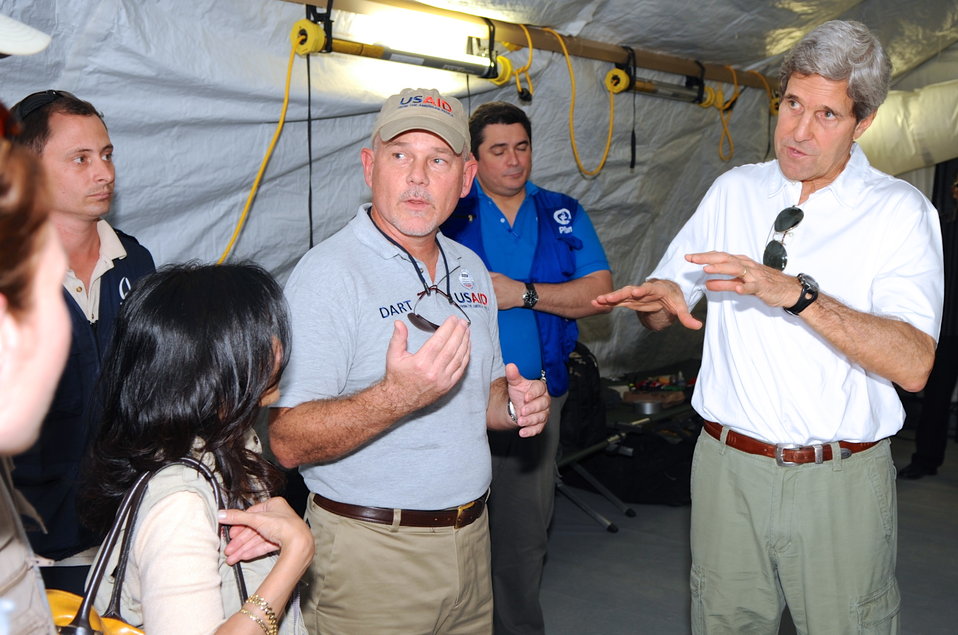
Secretary Kerry Receives a Typhoon Haiyan Recovery Briefing During Visit to Forward Operating Base in Tacloban City

U.S. Secretary of State John Kerry receives a briefing on Typhoon Haiyan recovery and relief efforts as he visits a USAID/OFDA Forward Operating Base in Tacloban City, Philippines, on December 18, 2013.